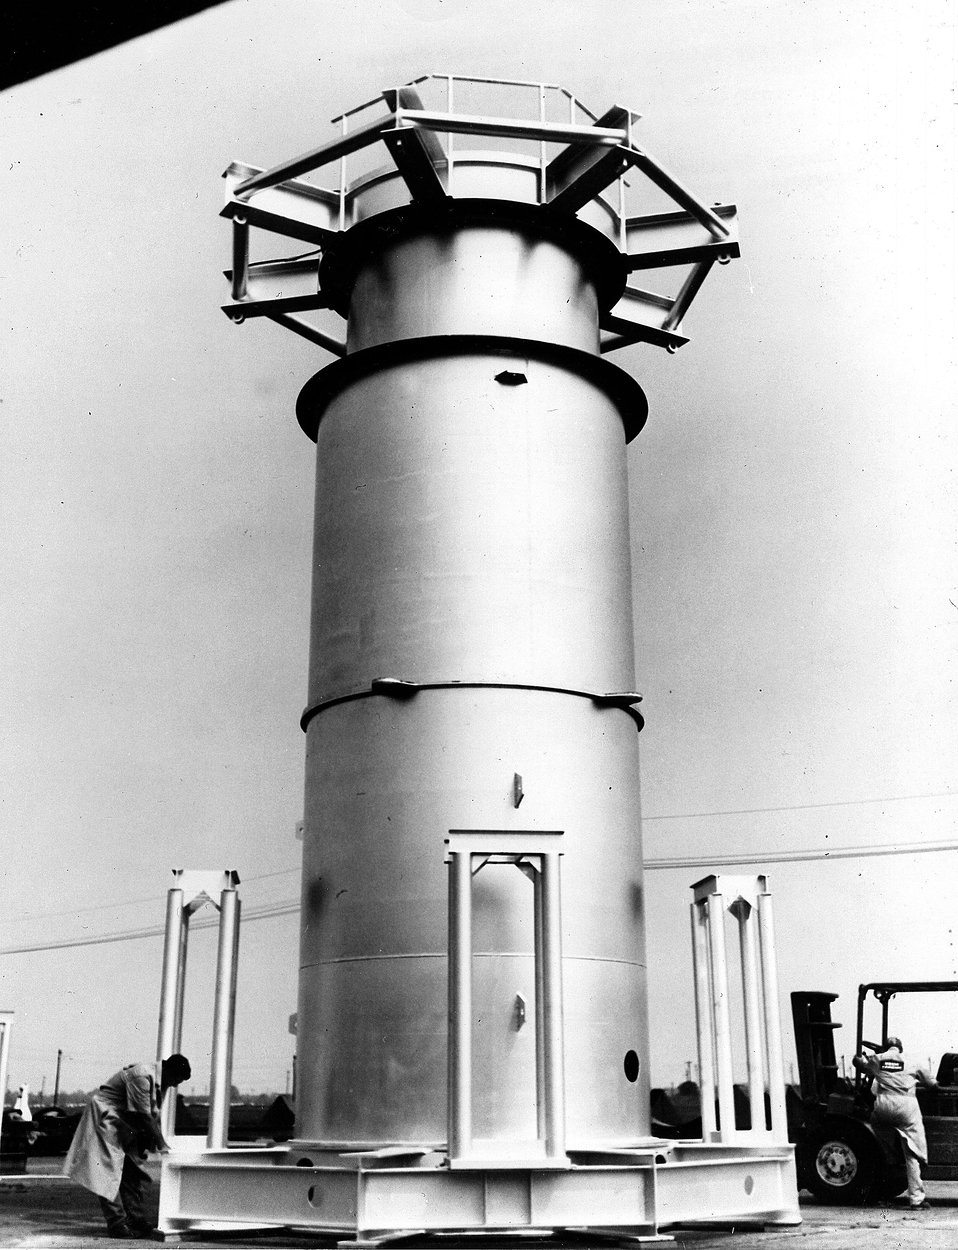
A Centaur loading fixture was fabricated by the Paducah Gaseous Diffusion Plant in Paducah, Kentucky. The 30' by 8' diameter tower will be used to proof test Titan missile structural components. Circa 1972.